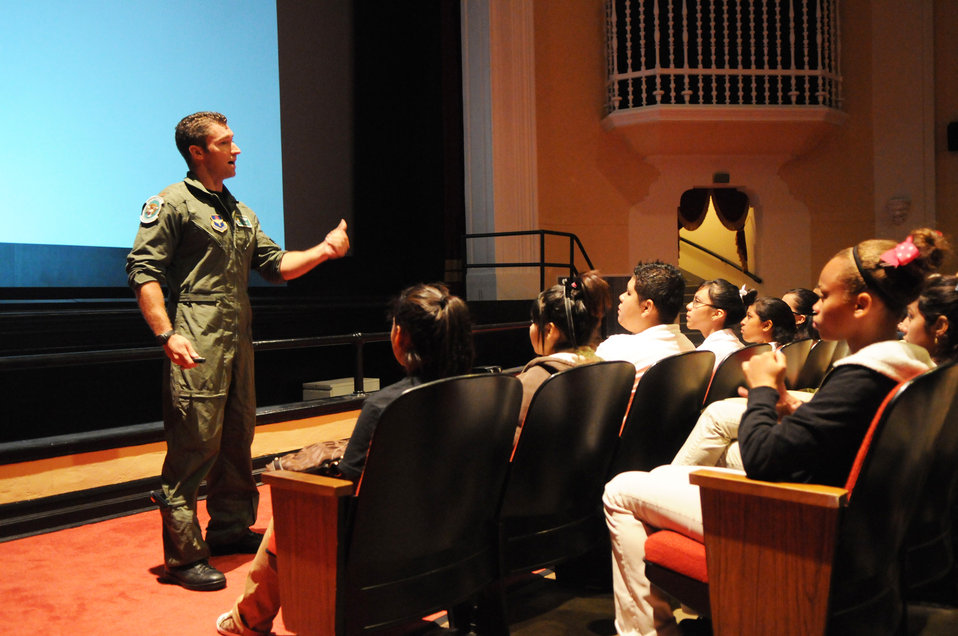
Randolph Airmen expose at-risk students to today's Air Force

Maj. Joel Neeb talks to Fox Technical High School students as part of the Giving Americans Motivational Education for the Real World program as part of their visit Sept. 11, 2009, to Randolph Air Force Base, Texas. Major Neeb is a 560th Flying Training Squadron flight examiner and F-15 Eagle pilot.